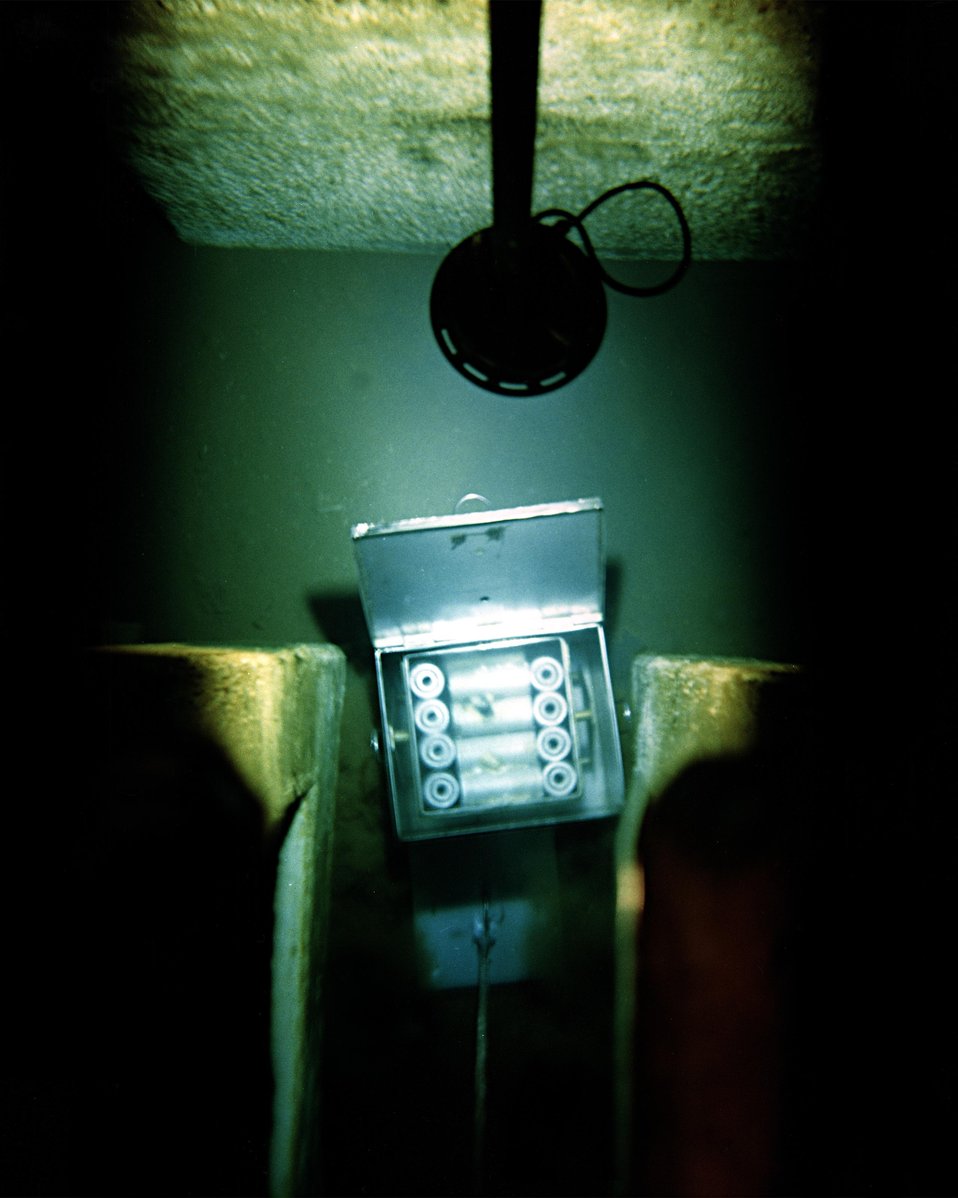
SLUGS IN BASIN STORAGE AWAITING STABILIZATION OR DISPOSITION.

THE RECEIVING BASIN FOR OFFSITE FUELS (RBOF) PROVIDES SAFE RECEIPT AND INTERIM STORAGE OF IRRADIATED SPENT NUCLEAR FUEL ELEMENTS FROM SRS PRODUCTION REACTORS AND FROM TEST AND RESEARCH REACTORS, DOMESTIC AND FOREIGN. SPENT FUEL ELEMENTS ARRIVE IN HEAVILY SHIELDED CASKS. ALL WORK IS DONE UNDERWATER, STARTING WITH REMOVAL OF THE ELEMENTS FROM THEIR CASKS.